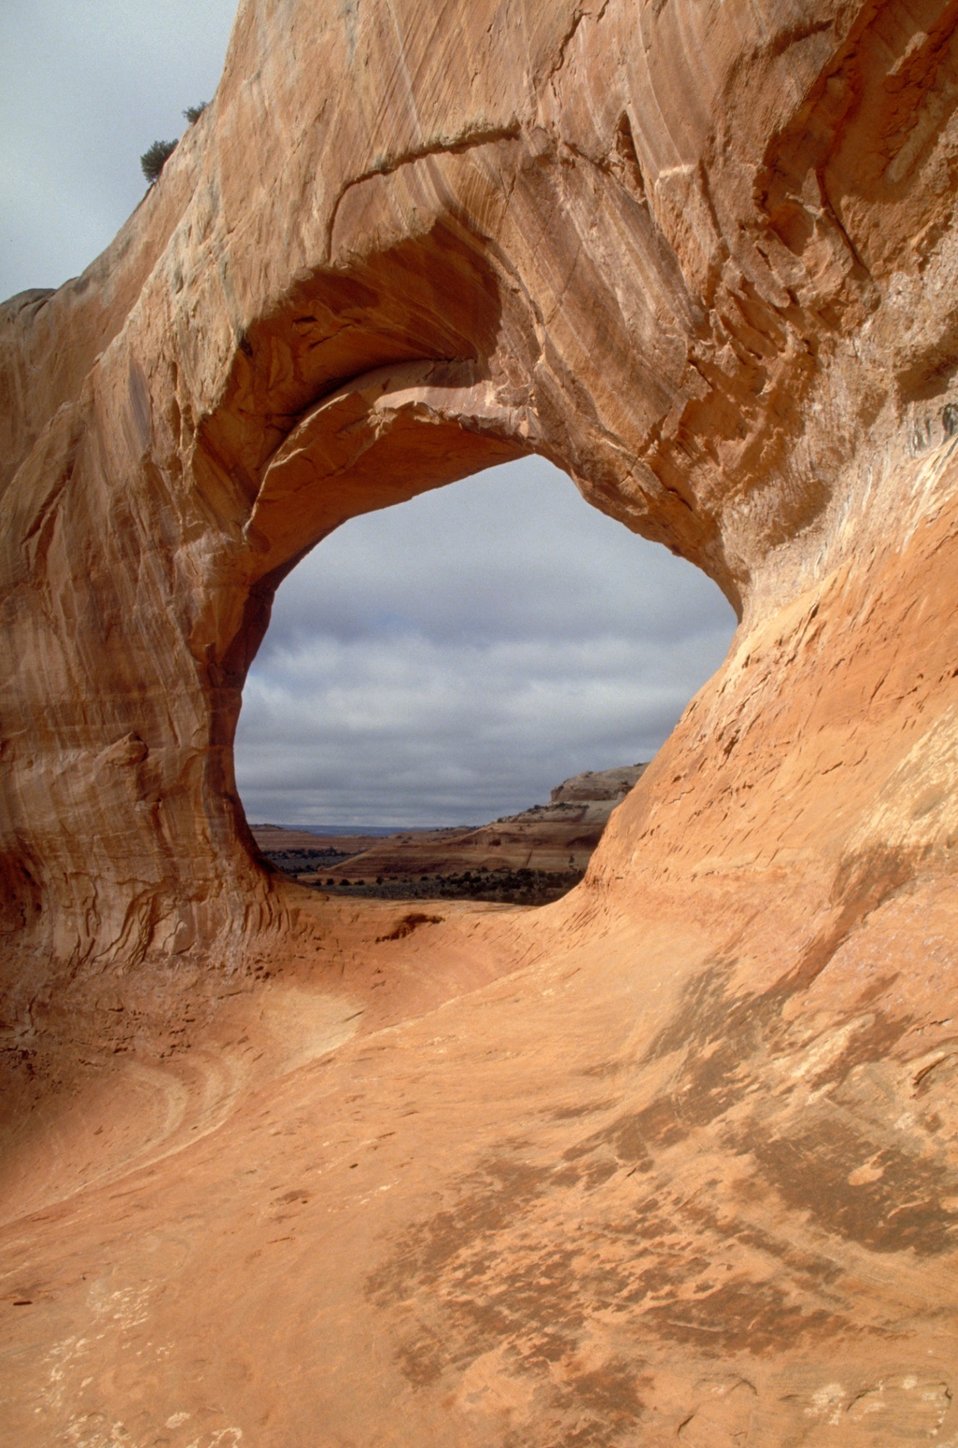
Wilson Arch south of Moab, Utah.